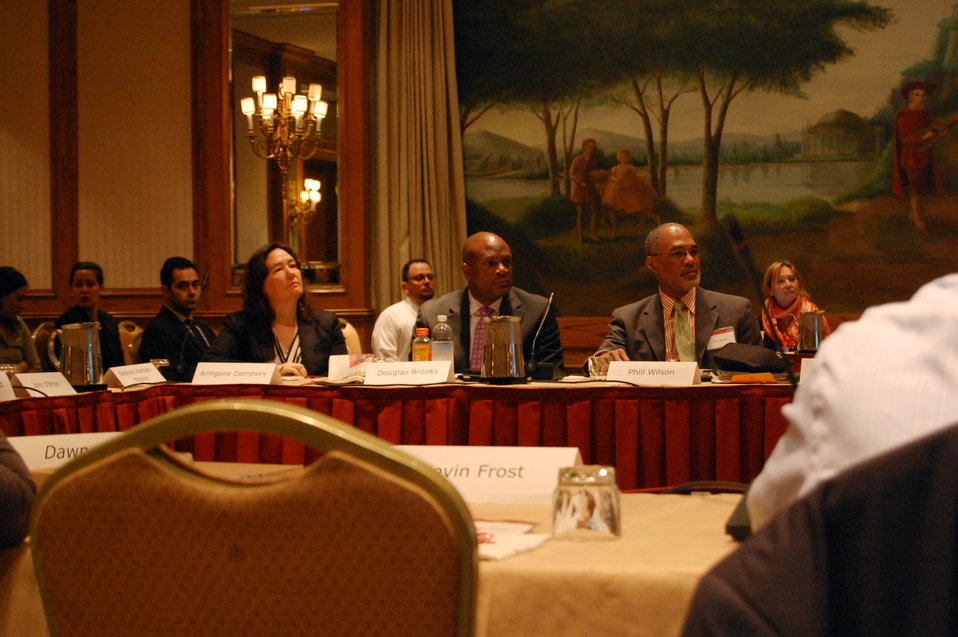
PACHA conf038